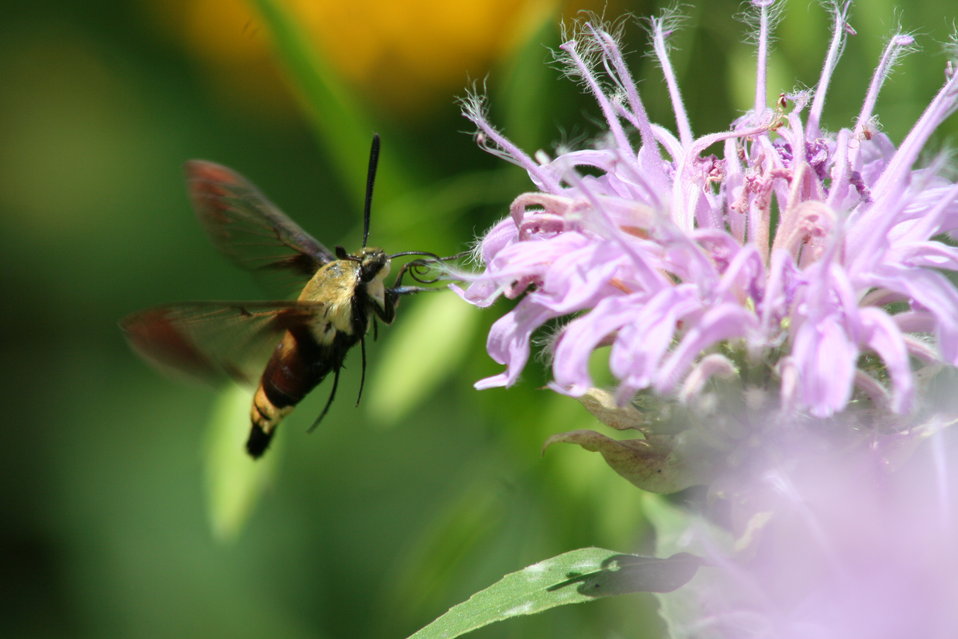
Hummingbird moth and beebalm.